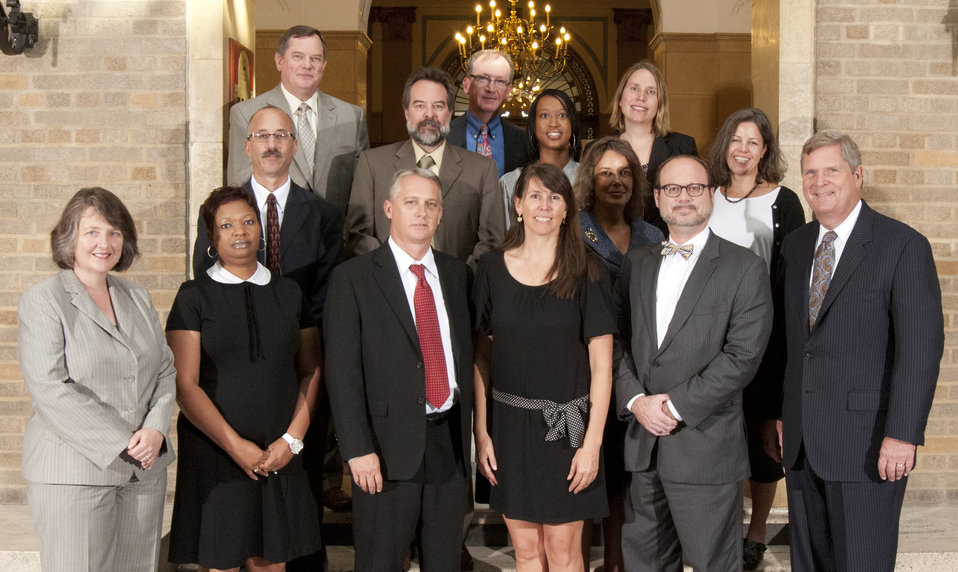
Agriculture Secretary Tom Vilsack and Deputy Agriculture Secretary Kathleen Merrigan with Honor Award Group Biomass Crop Assistance Program Team, Farm Service Agency (FSA) on the patio of the U.S. Department of Agriculture in Washington, D.C. on Wednesday, Sept. 12, 2012. The Biomass Crop Assistance Program Project Area Team enhanced rural prosperity by reviewing 40 project proposals and funding four projects under the Biomass Crop Assistance Program.